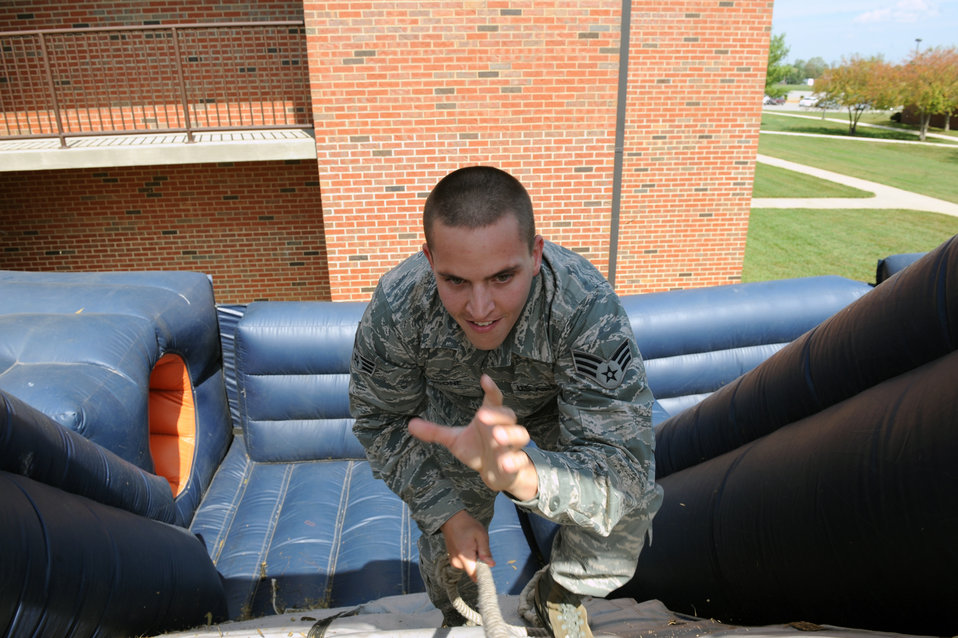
Scott AFB hosts suicide prevention day

Senior Airman Mark Rosone climbs up an inflatable slide at Suicide Prevention Field Day Sept. 23, 2010, at Scott Air Force Base, Ill. The obstacle course pitted squadron against squadron with the goal of getting the fastest team time. Airman Rosone is a member of the 375th Comptroller Squadron.